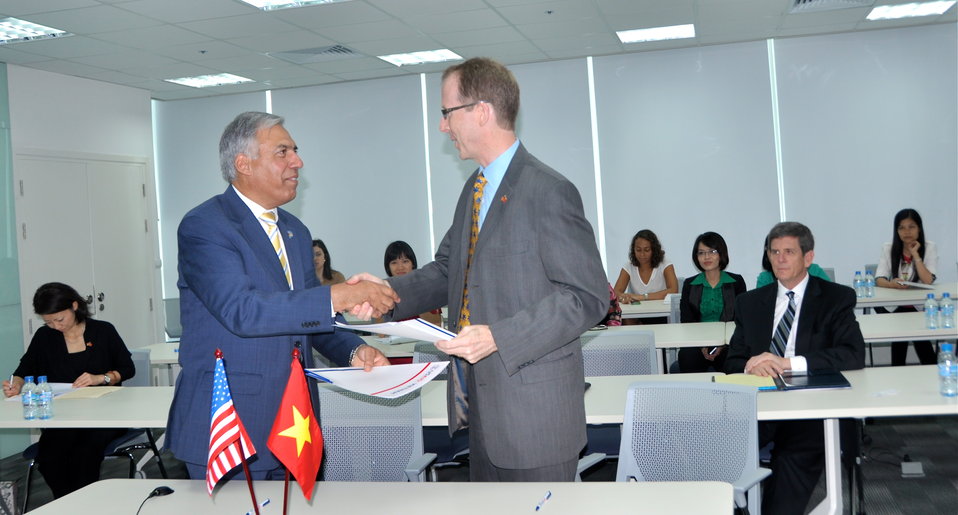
USAID, San Jose State University and Cisco Systems sign the Social Work Education Enhancement Program MOU

Hanoi, November 13, 2013.